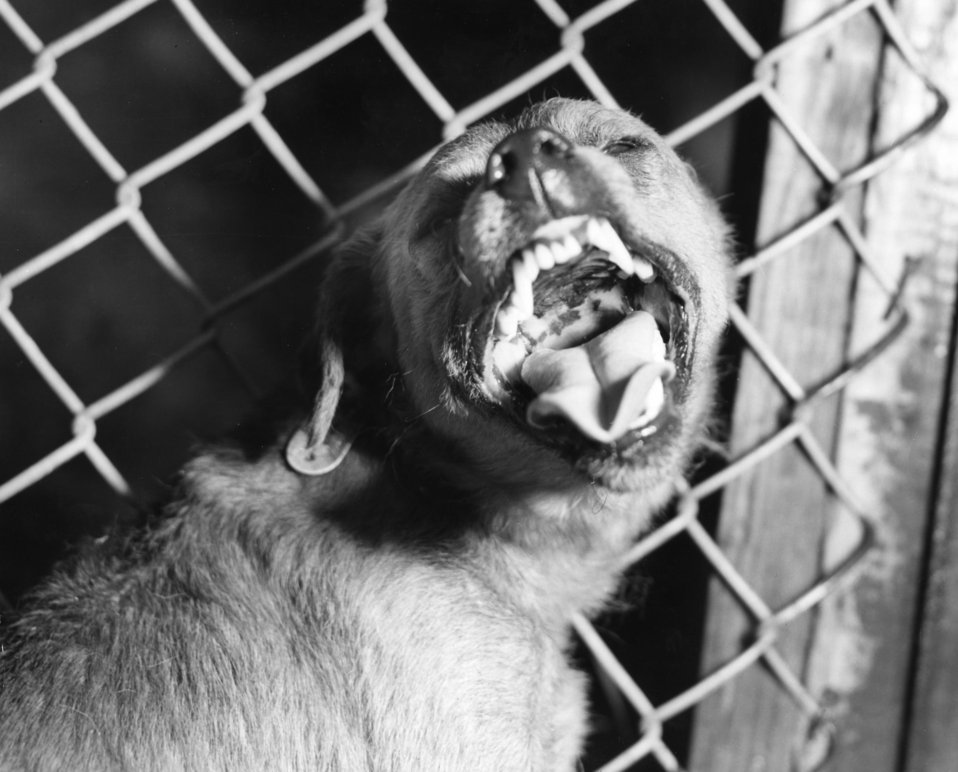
This photograph shows a canine suspected of being rabid that had been exhibiting signs of restlessness, and overall uncharacteristic aggressive behavior, which are two symptoms of rabies. Other symptoms of rabies in pets may include impaired walking, eating and drinking.